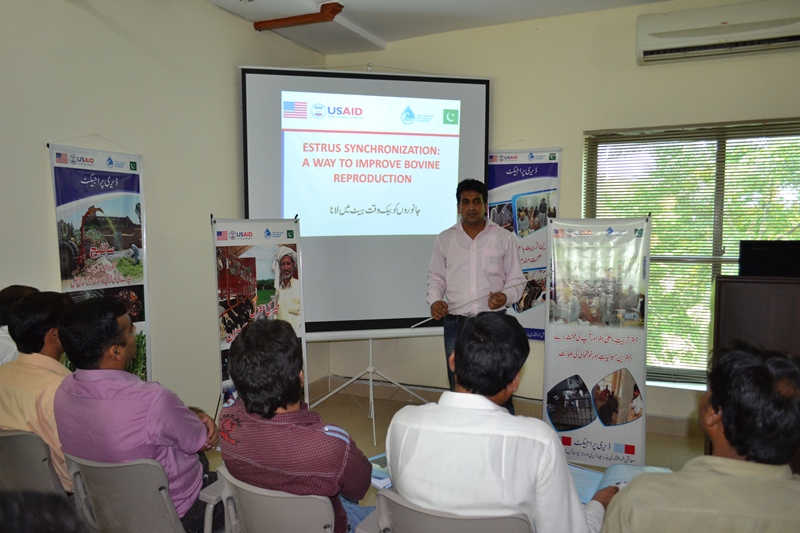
2 - First batch of Dairy Project farm manager trainees attending Farm Managers Training by USAId Dairy Project